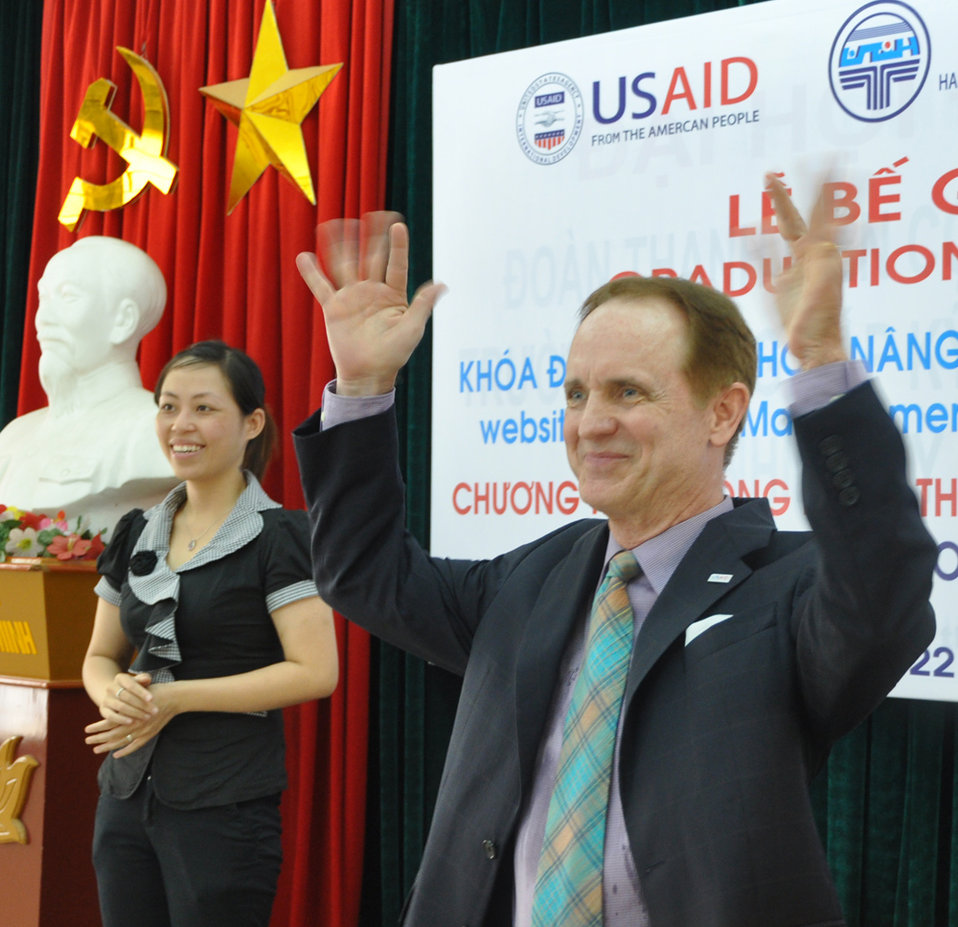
USAID Mission Director Francis Donovan participates in graduation of IT students in Hanoi on June 22, 2011.